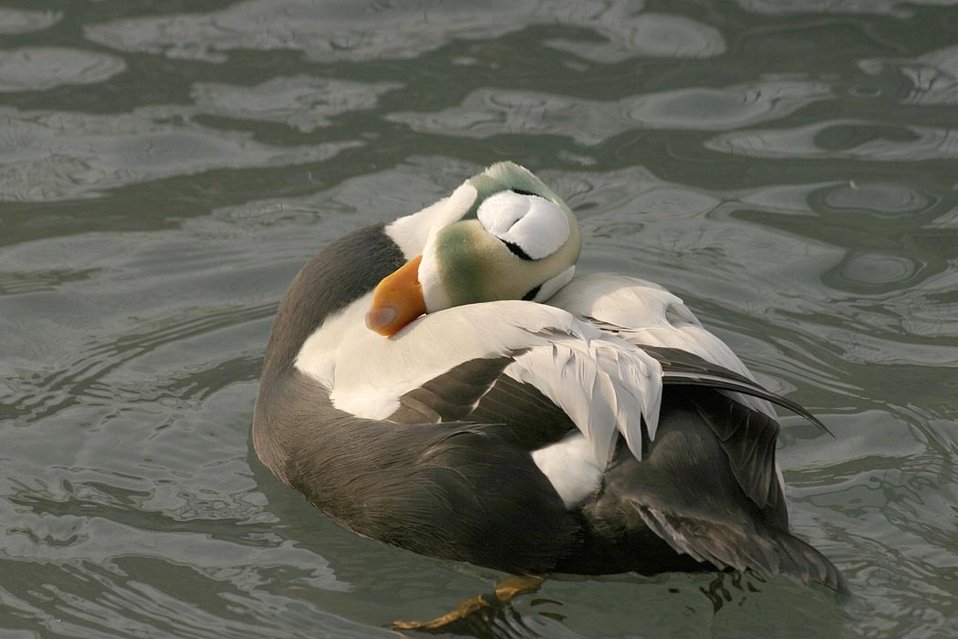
Threatened spectacled eider male (Somateria fischeri), Alaska SeaLife Center, Seward, Alaska